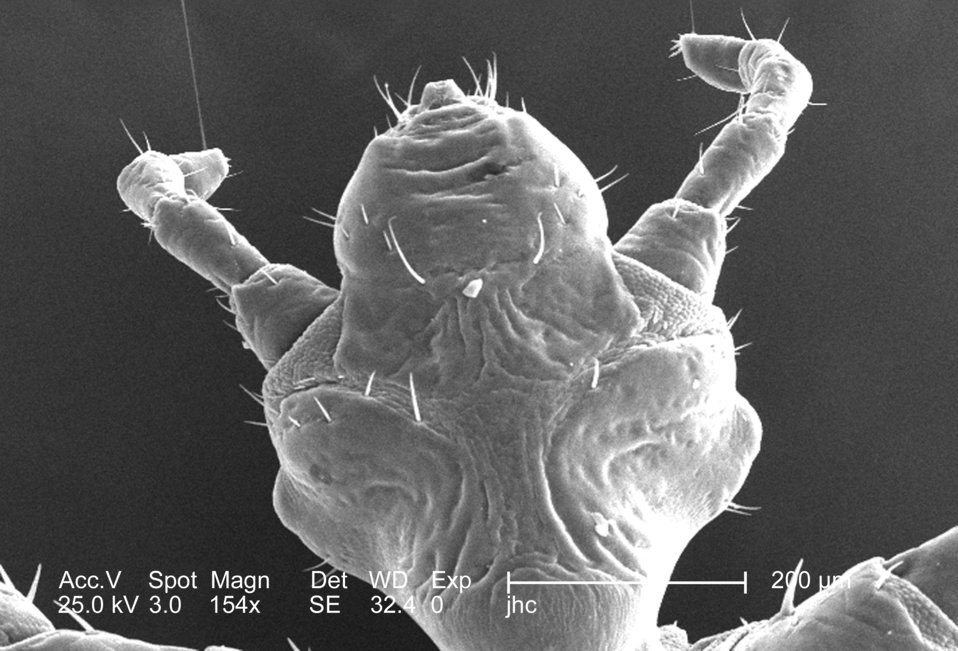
This was one of five scanning electron micrographic (SEM) images (PHIL# 9243 - 9247), successively magnified at higher and higher values, which focused on the head region of a female body louse, Pediculus humanus var. corporis from a ventral perspective. At a relatively low magnification of 154x, this SEM revealed some of the insect's exoskeletal morphology exhibited by the cephalic region. Note the two bilaterally situated antennae composed of three main segments: the most proximal scape, a pedicle, and the multi-segmented flagellum. The antennae, and the insect's body sport sensorial 'hairs' known as "setae', both of which provided the organism with a "picture' of its environment, by taking readings in thermal, chemical, and mechanical changes encountered in its immediate surroundings.